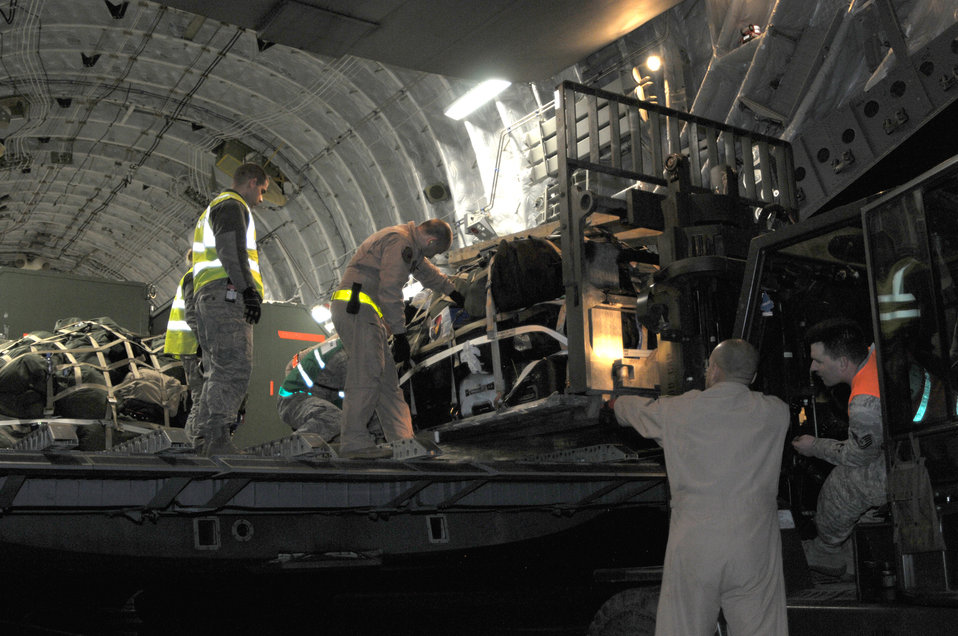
Operation Odyssey Dawn

Airmen from the 48th Fighter Wing and members of the Heavy Airlift Wing, Papa Air Base, Hungary, load equipment on a C-17 Globemaster III in support of Operation Odyssey Dawn on Royal Air Force Lakenheath, England, March 19, 2011. Members of the 48th Fighter Wing were recently notified that they would be supporting efforts in Operation Odyssey Dawn. The 48th FW provides all-weather, day or night air superiority and air-to-ground precision combat capability as well as combat search and rescue capabilities.